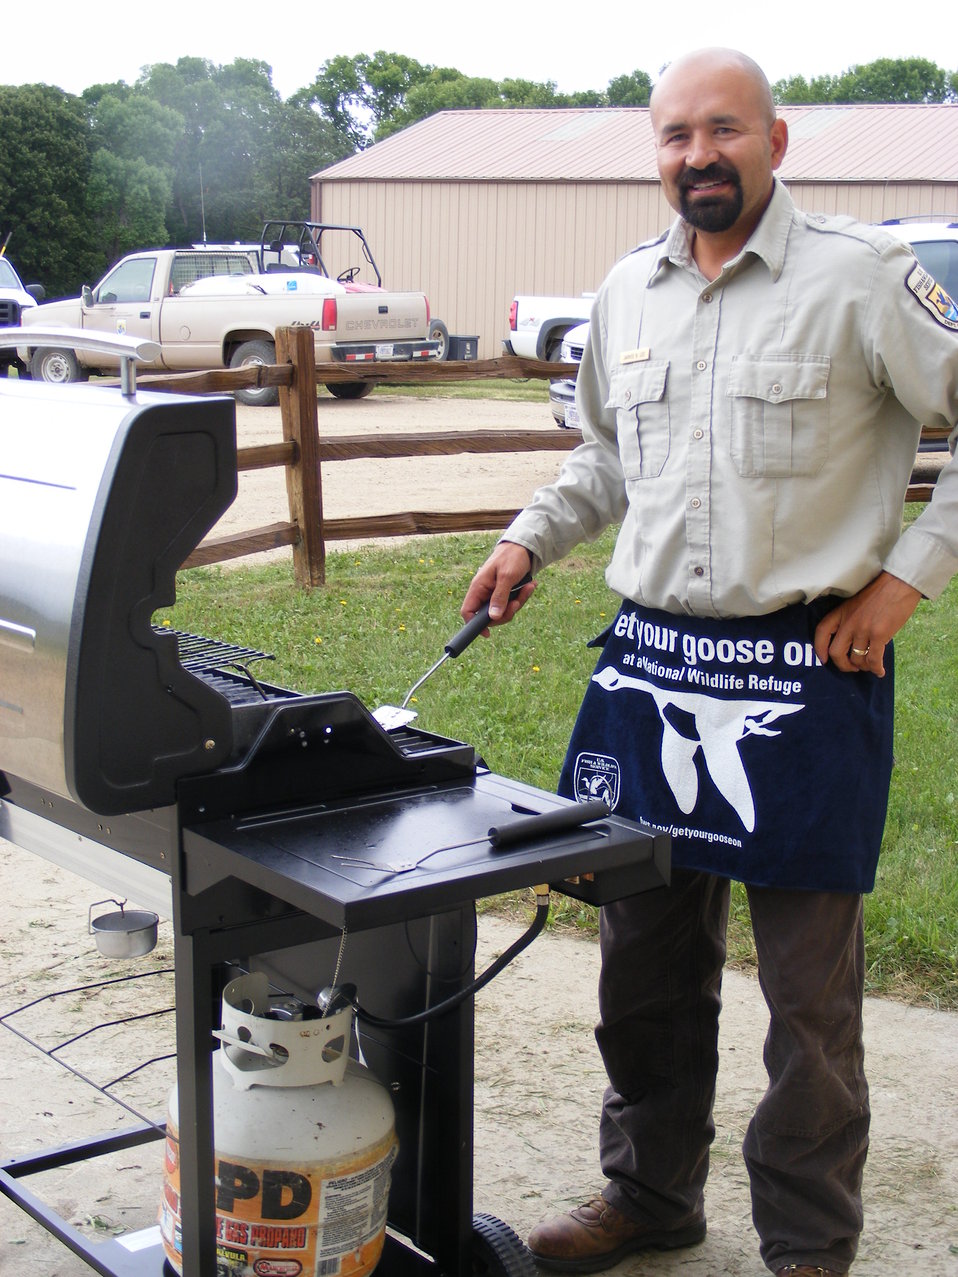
Grill Master - Get Your Goose On! Style